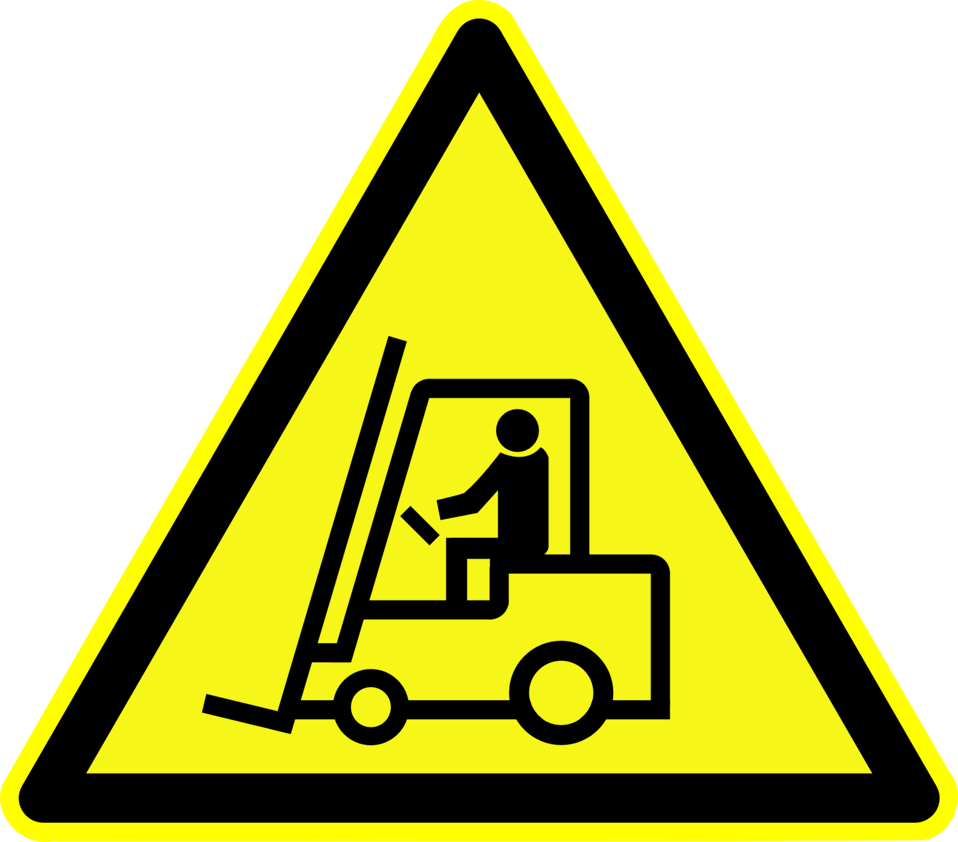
Deutsch: Warnung vor Flurförderzeugen, Warnzeichen D-W007 nach DIN 4844-2 Fork lift trucks warning